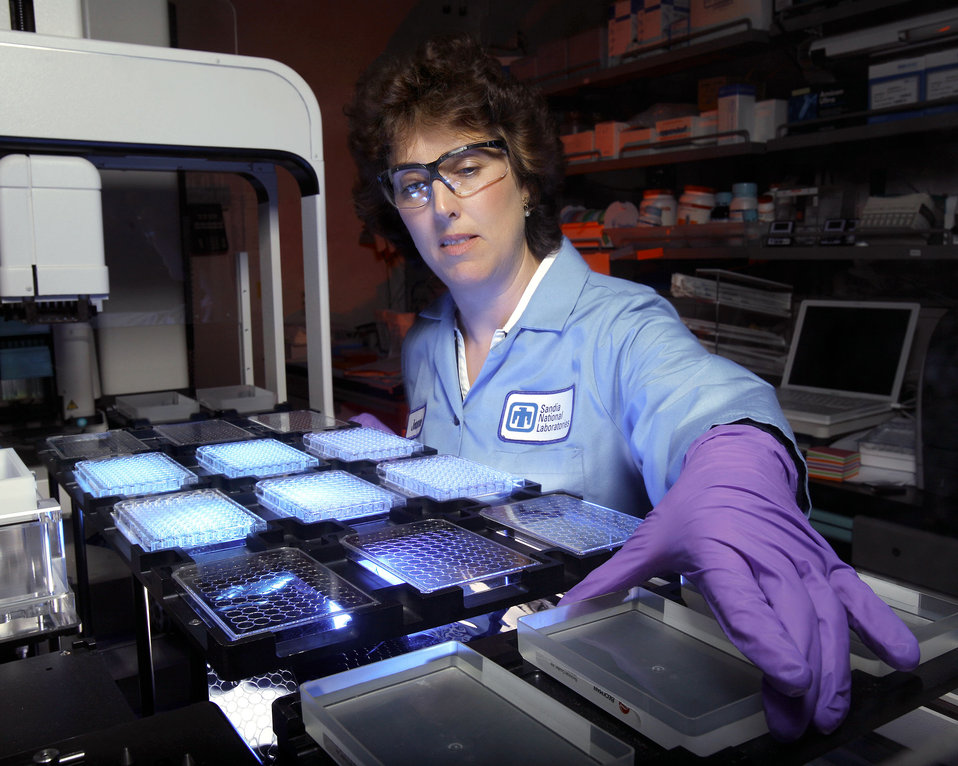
Sandia biochemist Joanne Volponi prepares enzyme sample for assaying.

Enzymes are capable of breaking down plant material and converting it to liquid fuel efficiently. Researchers are studying ways to make biofuels from plant materials called lignocellulosic ethanol. If the enzymes can be enlisted to do much of the chemical deconstruction work, they might unlock a new transportation economy based on ethanol derived from candidate plants other than corn. Lignocellulose, one of the most abundant renewable organic materials on Earth, is a mix of complex sugars and lignin that gives strength and structure to plant cell walls. The produce fuel ethanol, lignocellulose is with the help of enzymes or acids, broken down and converted to glucose, or sugar. The glucose is then fermented to produce ethanol and carbon dioxide. The project is a component of the Joint BioEnergy Institute (JBEI), a partnership of Lawrence Berkeley, Lawrence Livermore and Sandia national Laboratories and three research universities in the San Francisco Bay Area, funded by DOE's Office of Science.